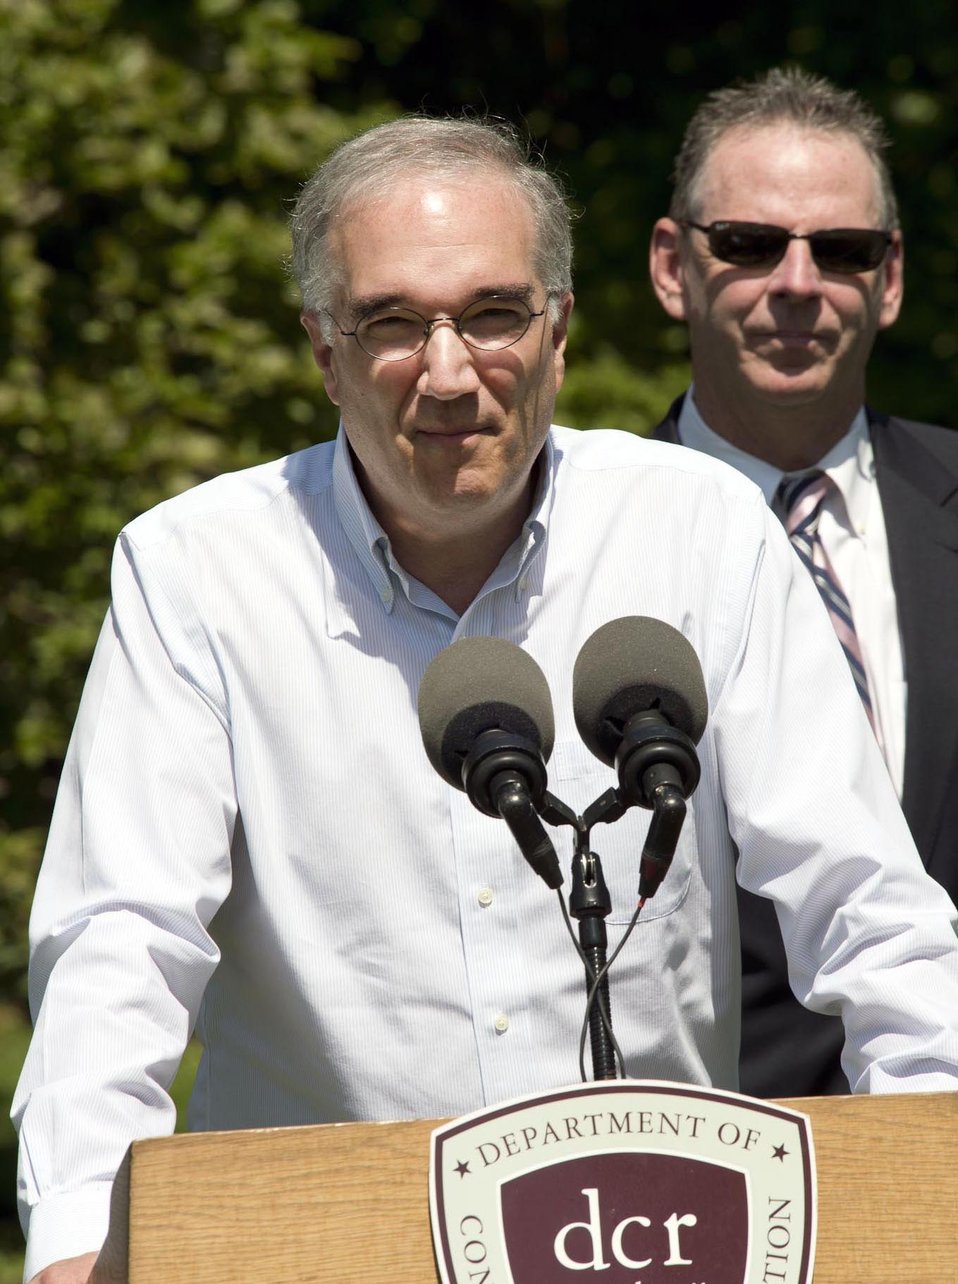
Director of the Arnold Arboretum of Harvard University William (Ned) Friedman speaks at the declaration event for the eradication of Asian Longhorned Beetle (ALB) in Boston, MA on May 12, 2014. Federal, state and local officials joined together to announce that ALB has been eradicated from the Boston regulated area. Boston joins five other areas to declared eradication of ALB in the U.S.